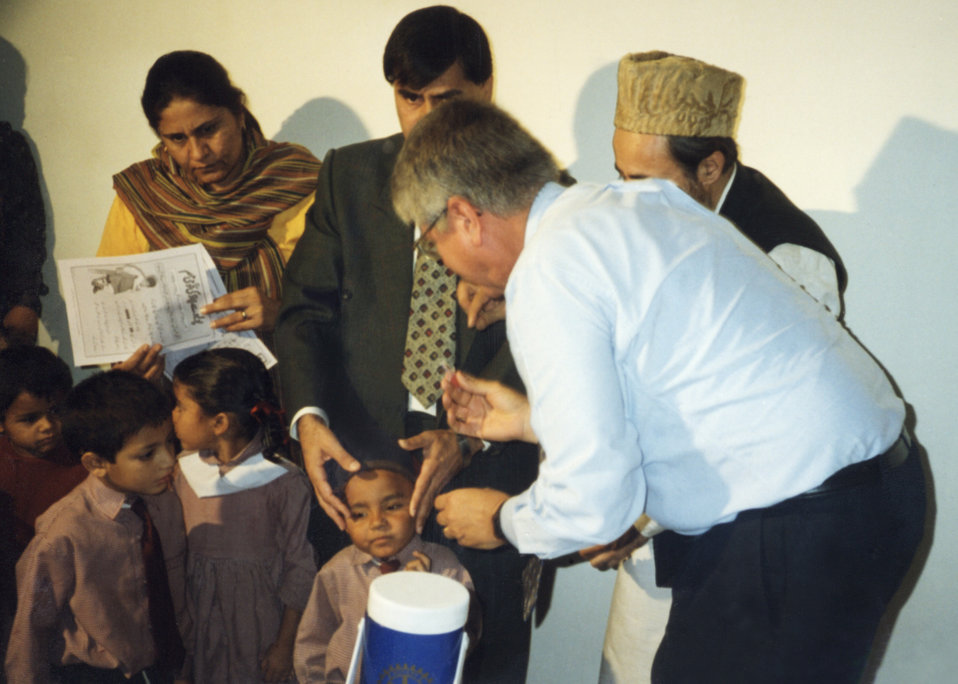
Here Bob Baldwin, Assoc. Dir., Off. of Global Health administers a polio immunization to a Pakistani child in rural Pakistan.